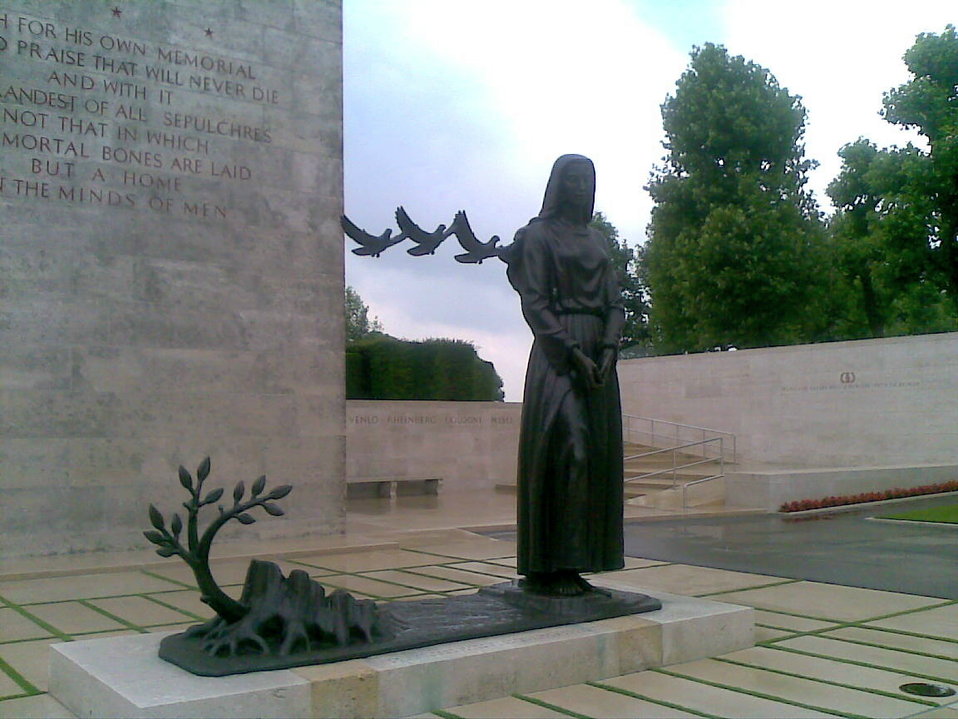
Deutsch: Netherlands American Cemetery, Bronzestatue